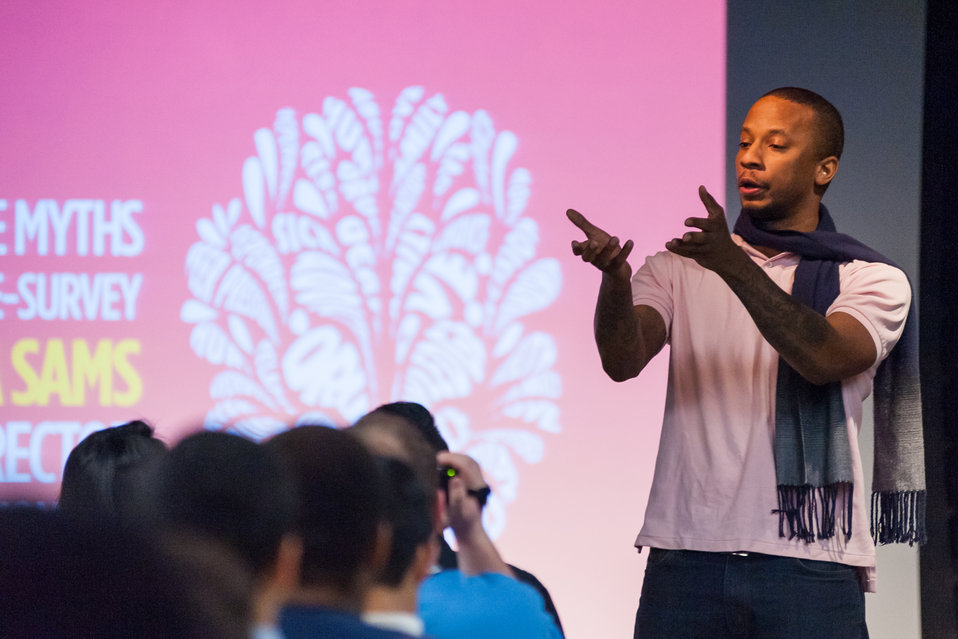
Mentor NDFW Event 2014

Mentor Foundation USA, in partnership with the National Institute on Drug Abuse (NIDA) and other key partners hosted a Youth Drug Facts Rally at the House of Sweden on Thursday, 30th January 2014. Approximately 200 students from five local high schools attended and had the opportunity to interact with top U.S. scientific experts, and inspiring guest speakers to “shatter the myths” about drugs and substance abuse, while pledging to stay drug-free.